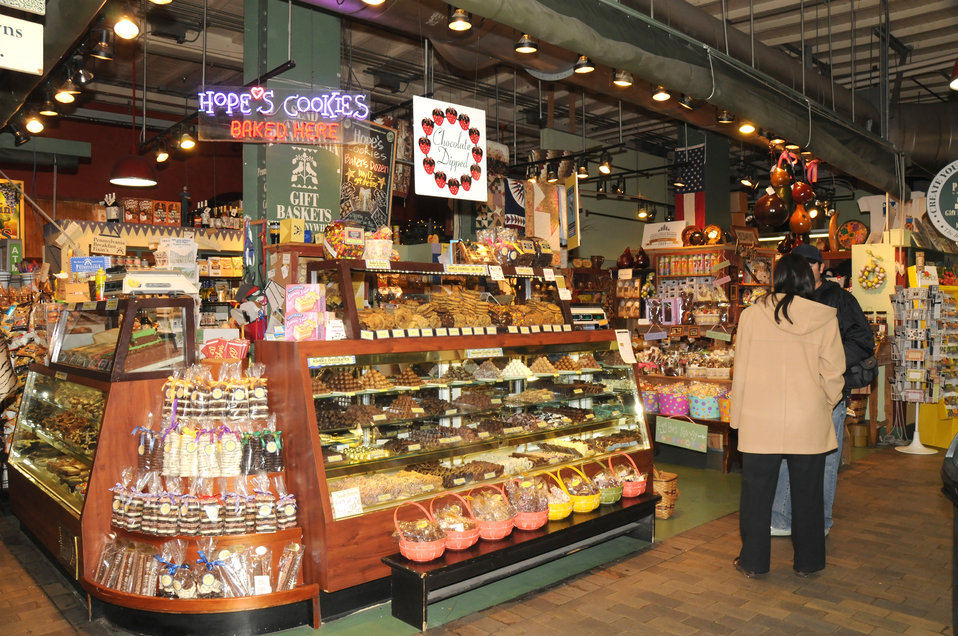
The Reading Terminal Market offers produce fresh from the field to the people of Philadelphia, PA on April 3, 2009. There are Amish specialties, fruits, vegetables, meats, seafood, and poultry. Reading Terminal Market opened for business in 1892 with approximately 78,000 square feet and almost 800 spaces for vendors. The Market was revitalized in the 1990’s and today is still the gastronomic bazaar that its original planners had envisioned. Many of the historic Market stands survived the reconstruction and are once again filled with local produce, fresh eggs, milk, meats, poultry, seafood, handmade crafts, jewelry, and clothing. The Market is home to more than 80 merchants, two of whom are descendants of the original stand holders from a century before.